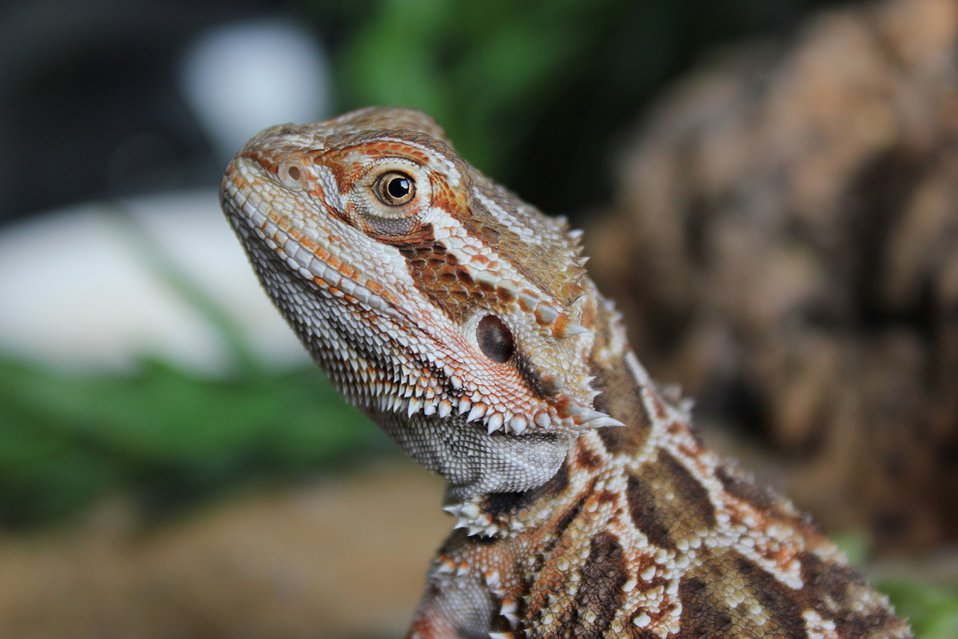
Bearded dragon close up.